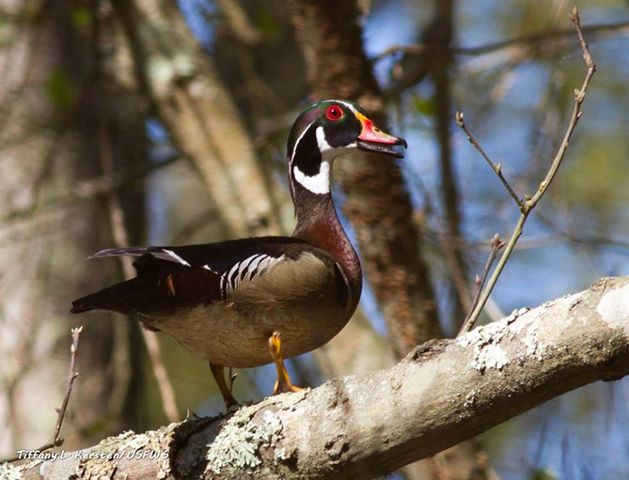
Photo of the Week - Wood Duck (NJ)

Photo of the Week - 6/3/13

Wood Ducks, including this beautiful male, have been a somewhat common sighting as of late along the Songbird Trail at Edwin B. Forsythe National Wildlife Refuge.

Credit Tiffany Kersten/USFWS

www.fws.gov/refuge/Edwin B Forsythe/